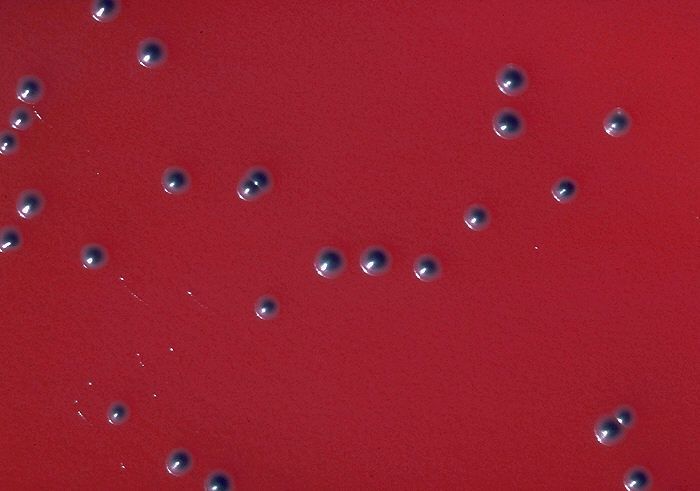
Blood agar plate culture of Corynebacterium diphtheriae (gravis), smooth.